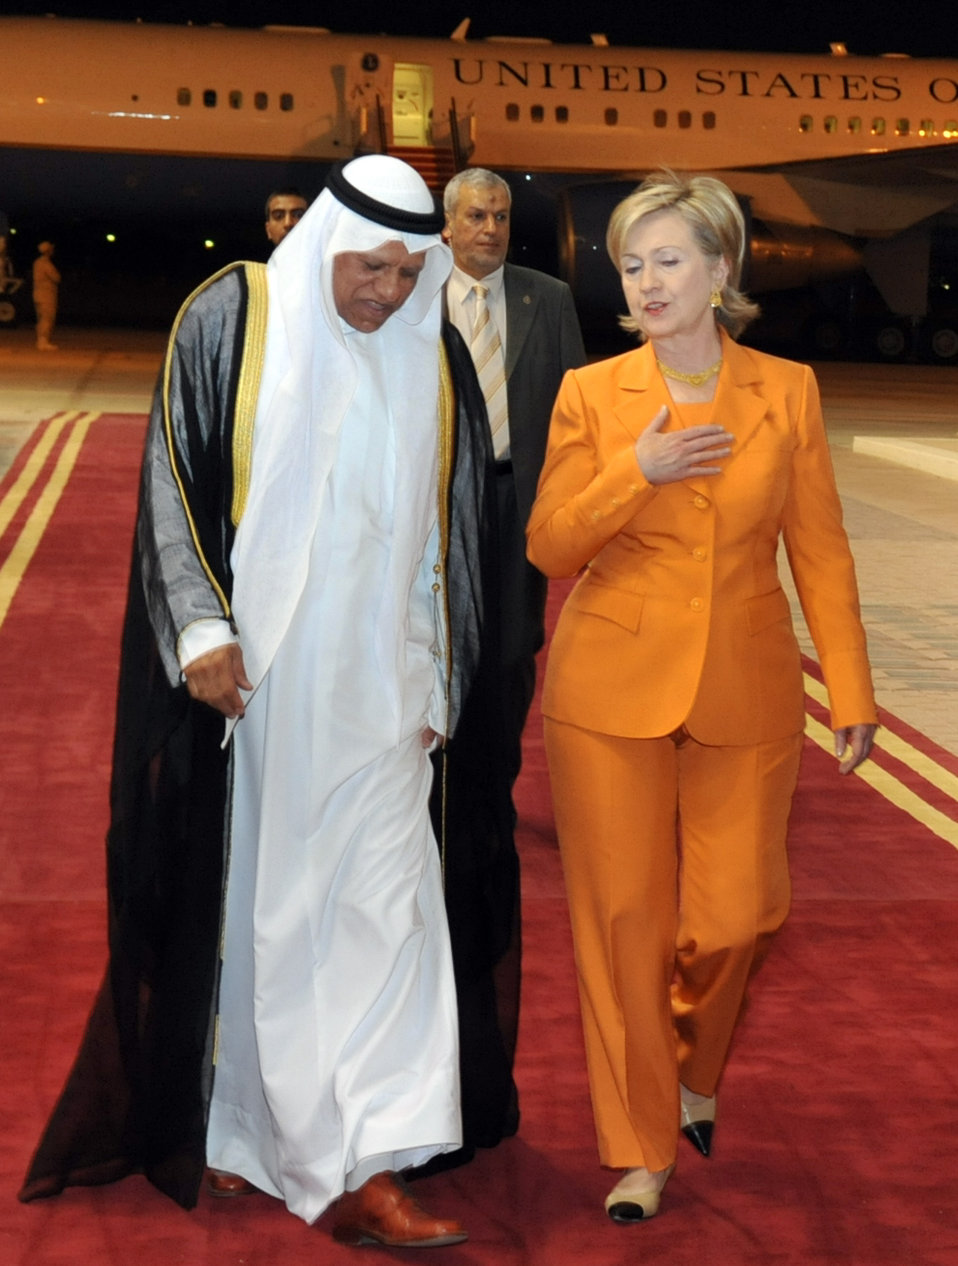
Secretary Clinton Arrives in Kuwait

U.S. Secretary of State Hillary Rodham Clinton arrives in Kuwait to a welcome from Kuwaiti Minister of Foreign Affairs Ambassador Ali Al-Sammak (left) in Kuwait City, Kuwait April 24, 2009.